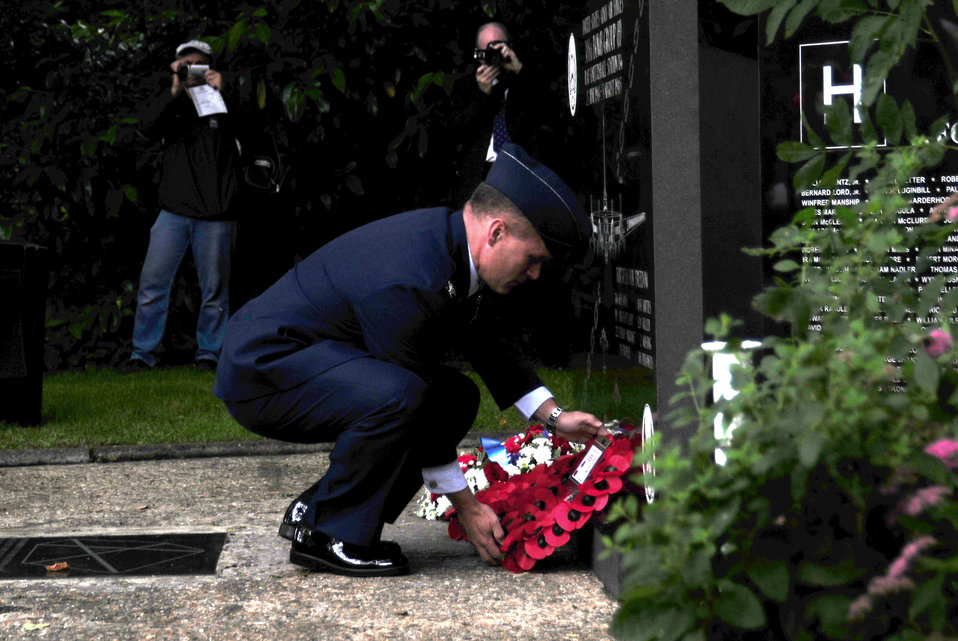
UK's 'Friendly Invasion' 70 years on

Col. Mark Ciero, the 48th Fighter Wing vice commander, lays a wreath at the 388th Bombardment Group memorial at Coney Weston, England, July 14, 2012. The memorial was re-dedicated to the Airmen who lost their lives while serving in the 388th BG at Knettishall Airfield, England.